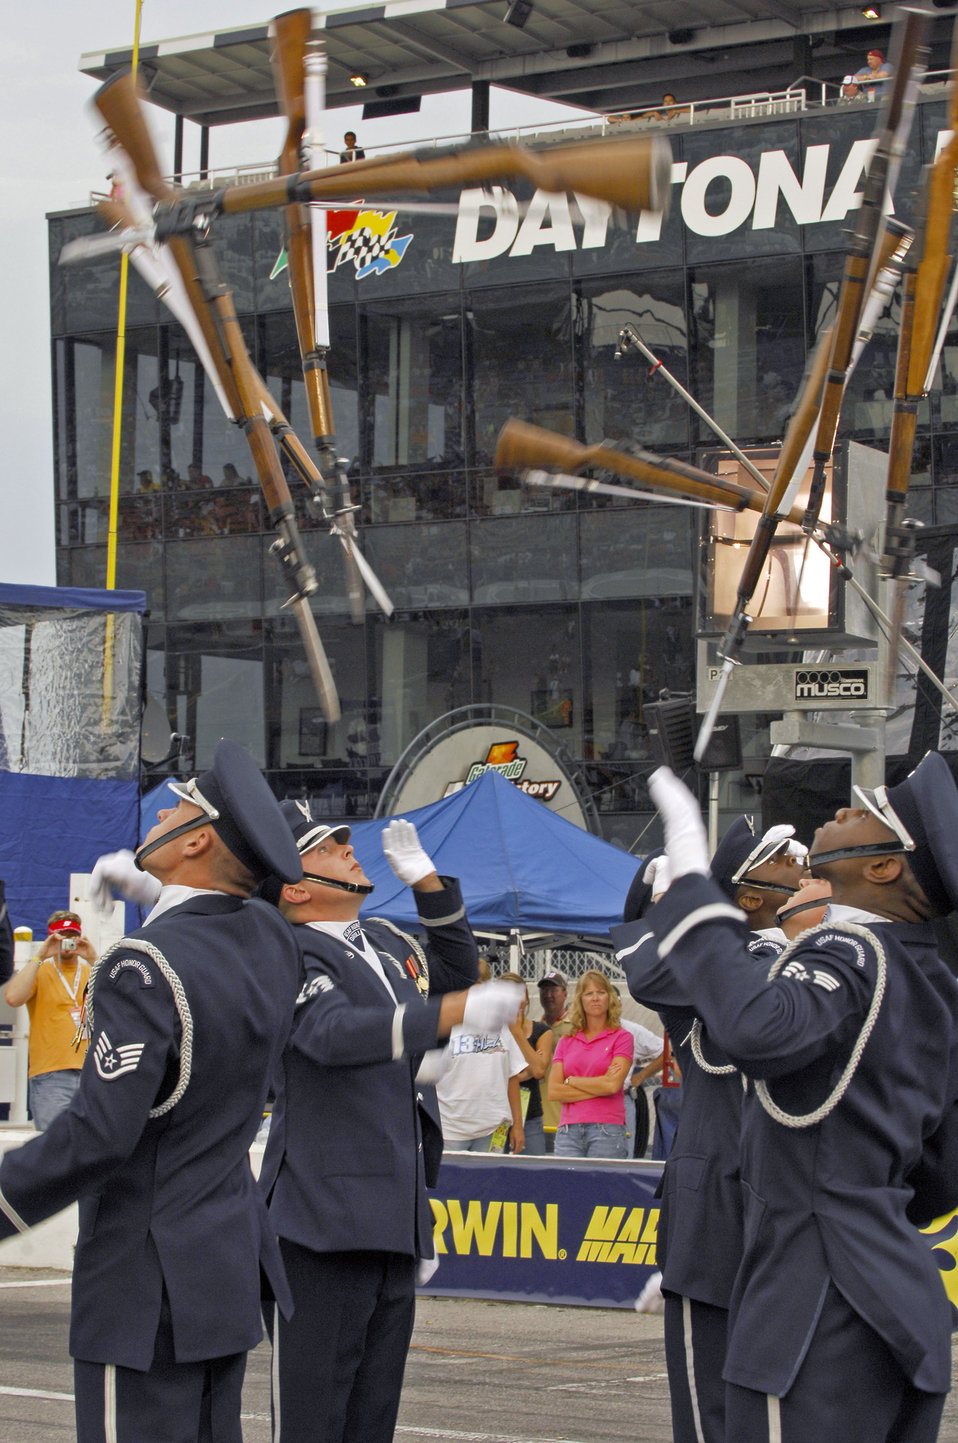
Drill team performs at NASCAR race

Members of the Air Force Drill Team perform their 16-man sequence in front of more than 150,000 spectators during the pre-race events at NASCAR's Pepsi 400 July 7 in Daytona, Fla. The drill team joined Secretary of the Air Force Michael W. Wynne to represent the Air Force as a part of the